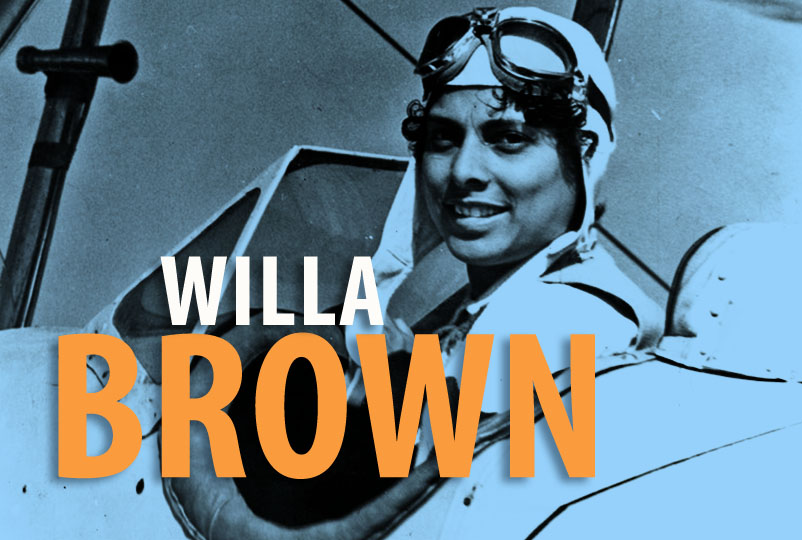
Willa Brown